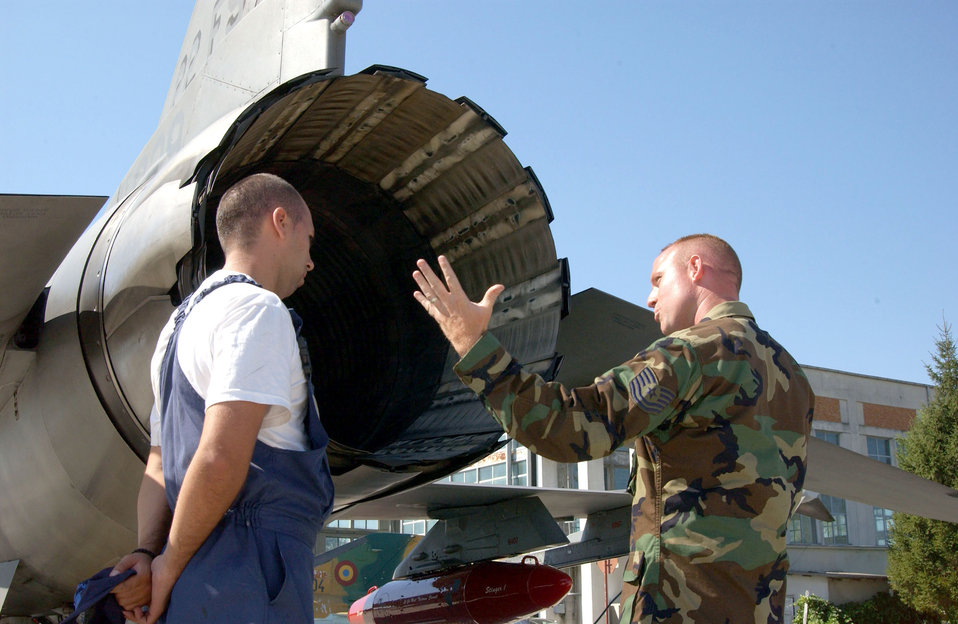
Viper Lance wraps up

Tech. Sgt. Aaron Renn talks to Airman Iacob Catalin about maintenance on an F-16 Fighting Falcon during Exercise Viper Lance 2006 at Mihail Kogalniceanu Air Base, Romania, Aug. 24. The exercise marks the first time F-16 crews have trained in Romania. Sergeant Renn is a flightline expeditor with the 22nd Expeditionary Fighter Squadron. Airman Catalin is a Romanian air force mechanic.